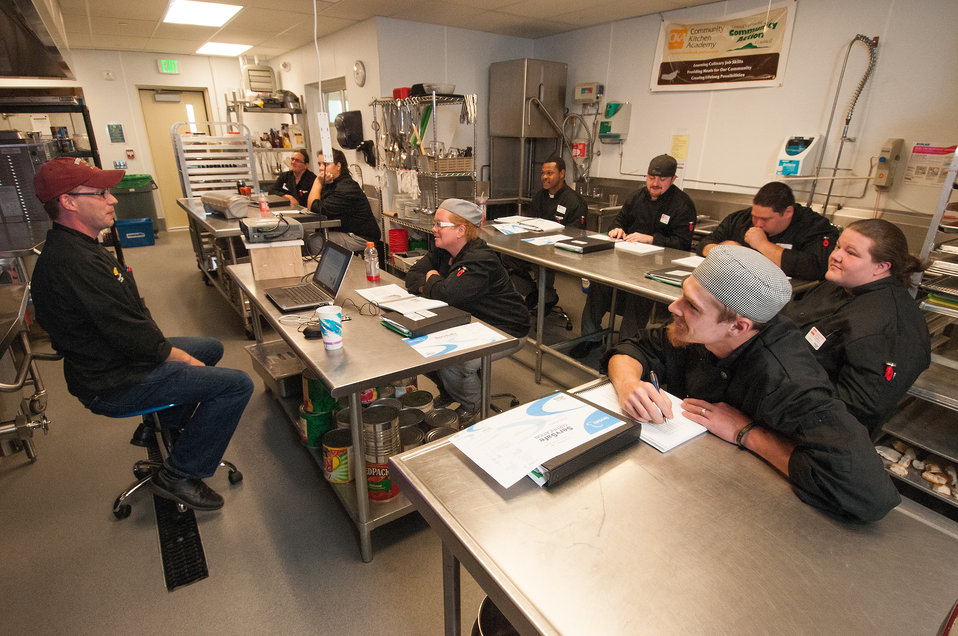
(L to R) Chef Byron David Moyer discusses the curriculum with Alan Wild, Christina LaRock, Charles Bent, Jr., Joshua Sera, Danny White, Emily Severance, Ashley Sherman and Rebecca Miller students in the Vermont Food Bank job training kitchen co-located at the Central Vermont Community Action Council. The program provides nutrition and food preparation skills that can lead to employment opportunities. The mission of the CVCAC is to create economic security for low to moderate-income residents in rural Central Vermont. Through the assistance of a U.S. Department of Agriculture (USDA) Rural Development (RD) Community Facilities (CF) Grant the CVCAC was able to consolidate their services in downtown Barre, Vermont on Sep. 17, 2013.